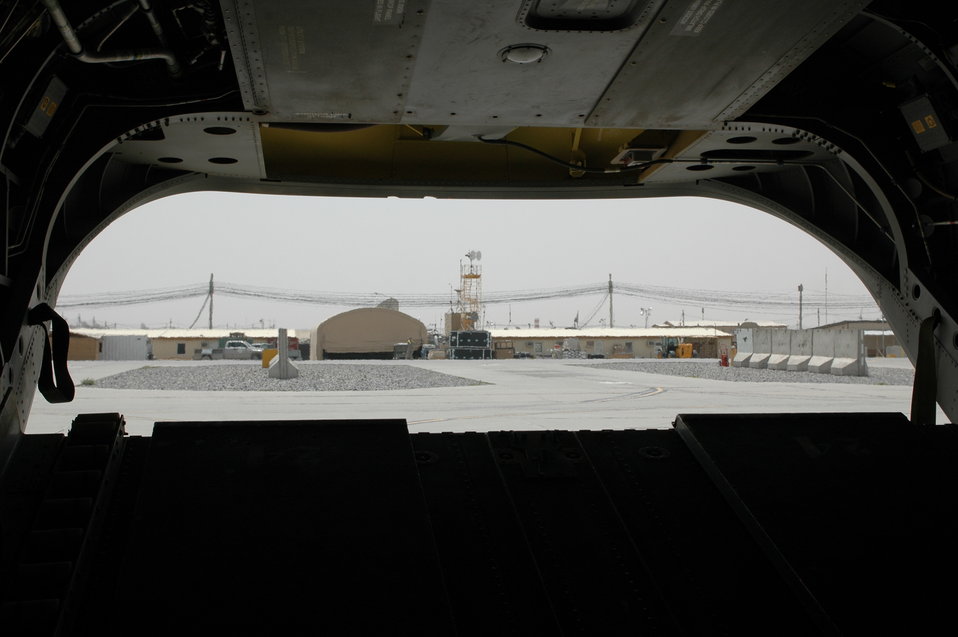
CODEL Berman